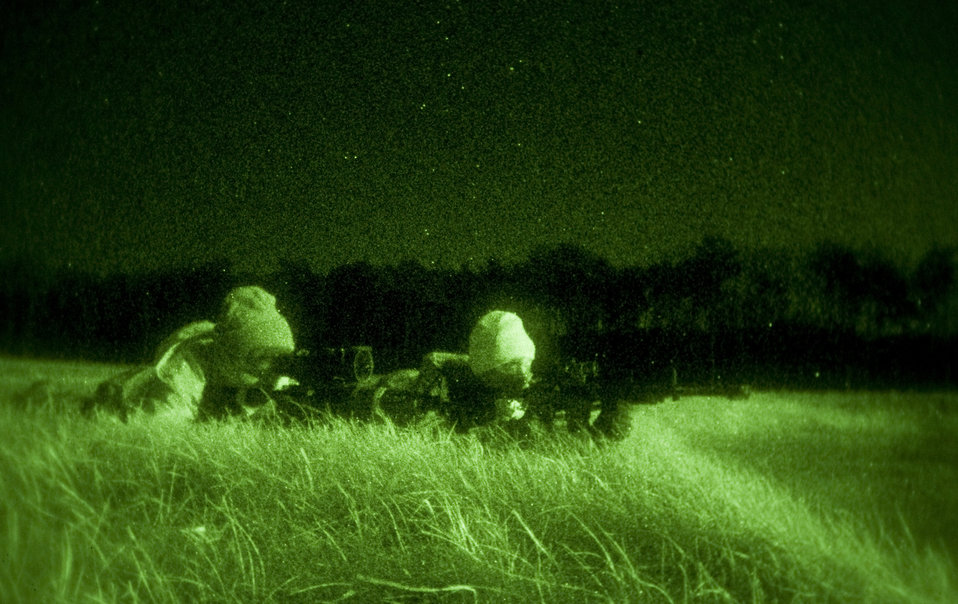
Wait for the right moment

Two Airmen, role-playing as opposing forces, lie prone before ambushing the Japan Ground Self Defense Force's command post, Dec. 4, 2010, during a bilateral guard and protect exercise at Misawa Air Base, Japan.